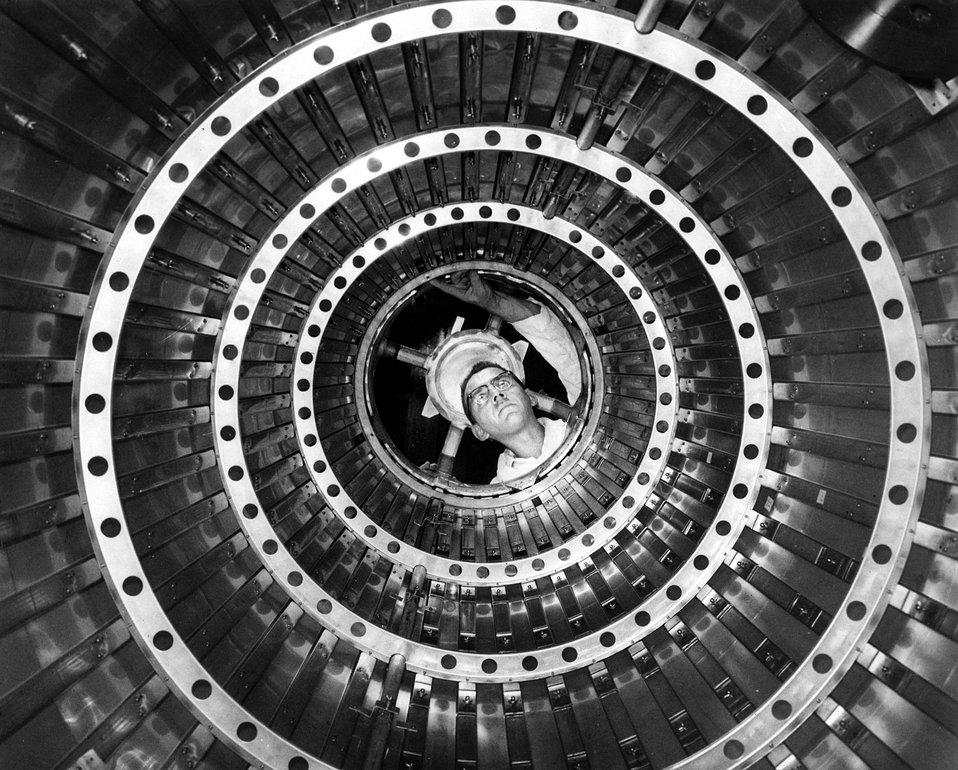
A compact nuclear reactor for space will be mounted at the top of this eight foot long stainless steel support cone as part of the SNAP 10A system.